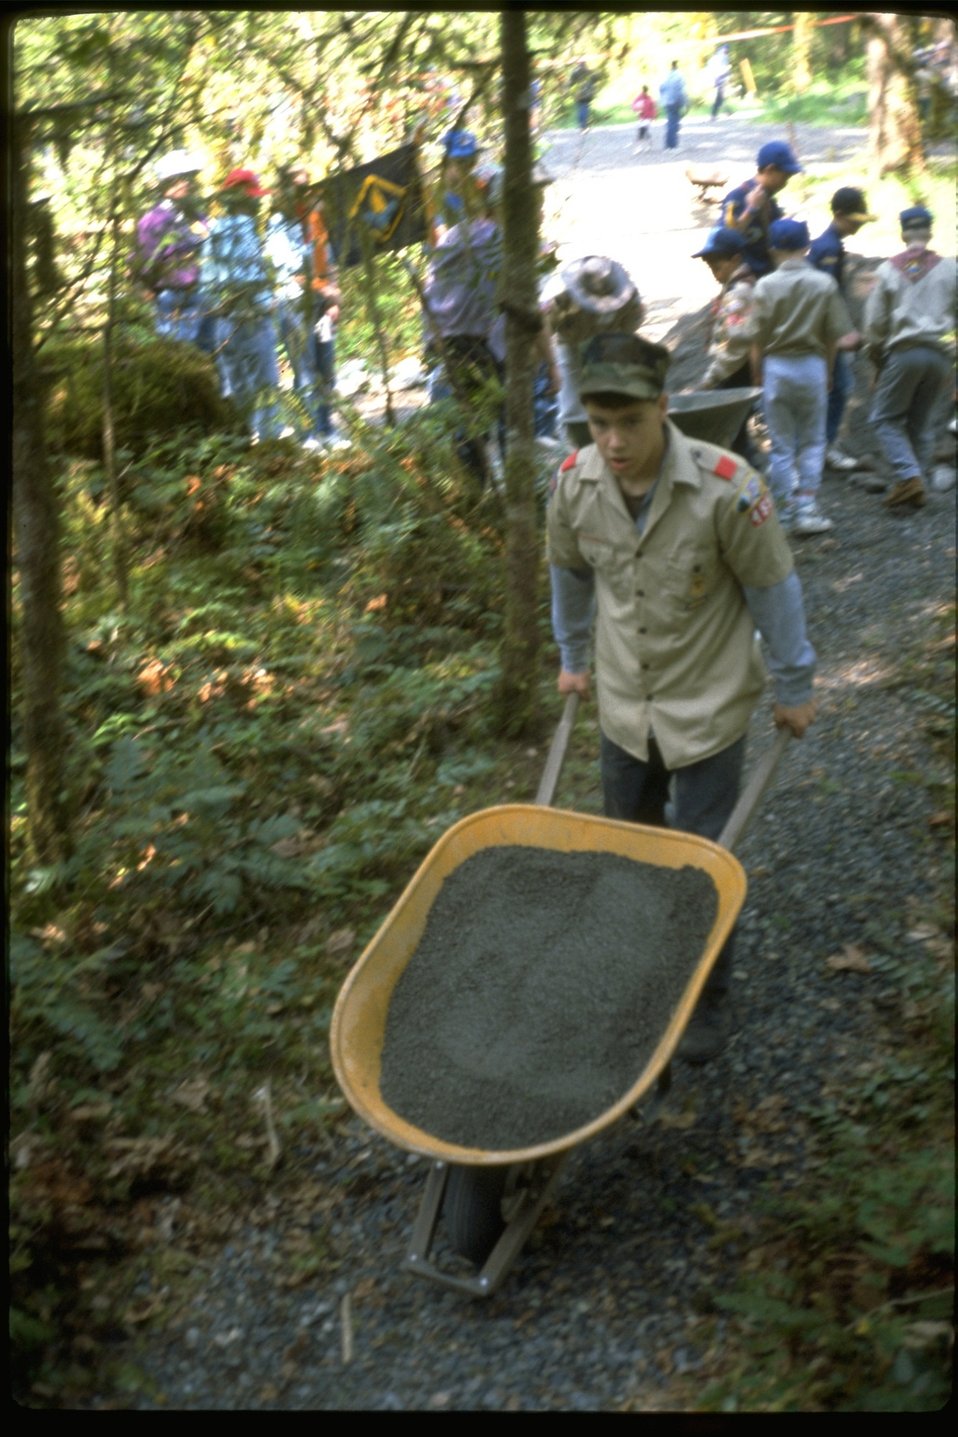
Boy Scout Troop cleaning at BLM Fisherman's Recreation Area.